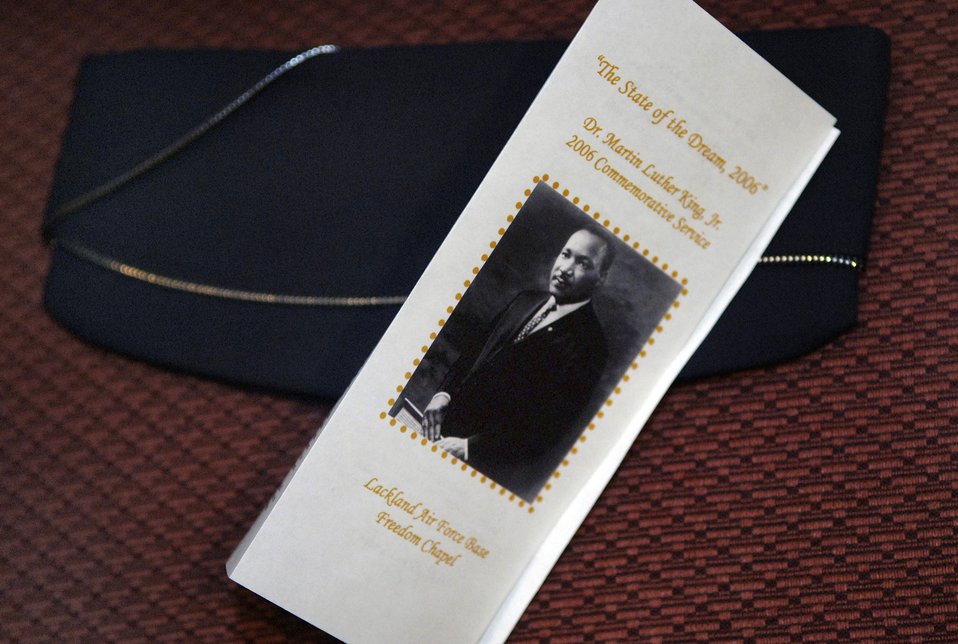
Honoring Martin Luther King Jr.

LACKLAND AIR FORCE BASE, Texas (AFPN) -- Today marks the 20th anniversary of the national holiday, Martin Luther King Jr. Day. At Freedom Chapel, here, a pamphlet lays on an Air Force blues hat Jan. 13 during the base's commemorative service.